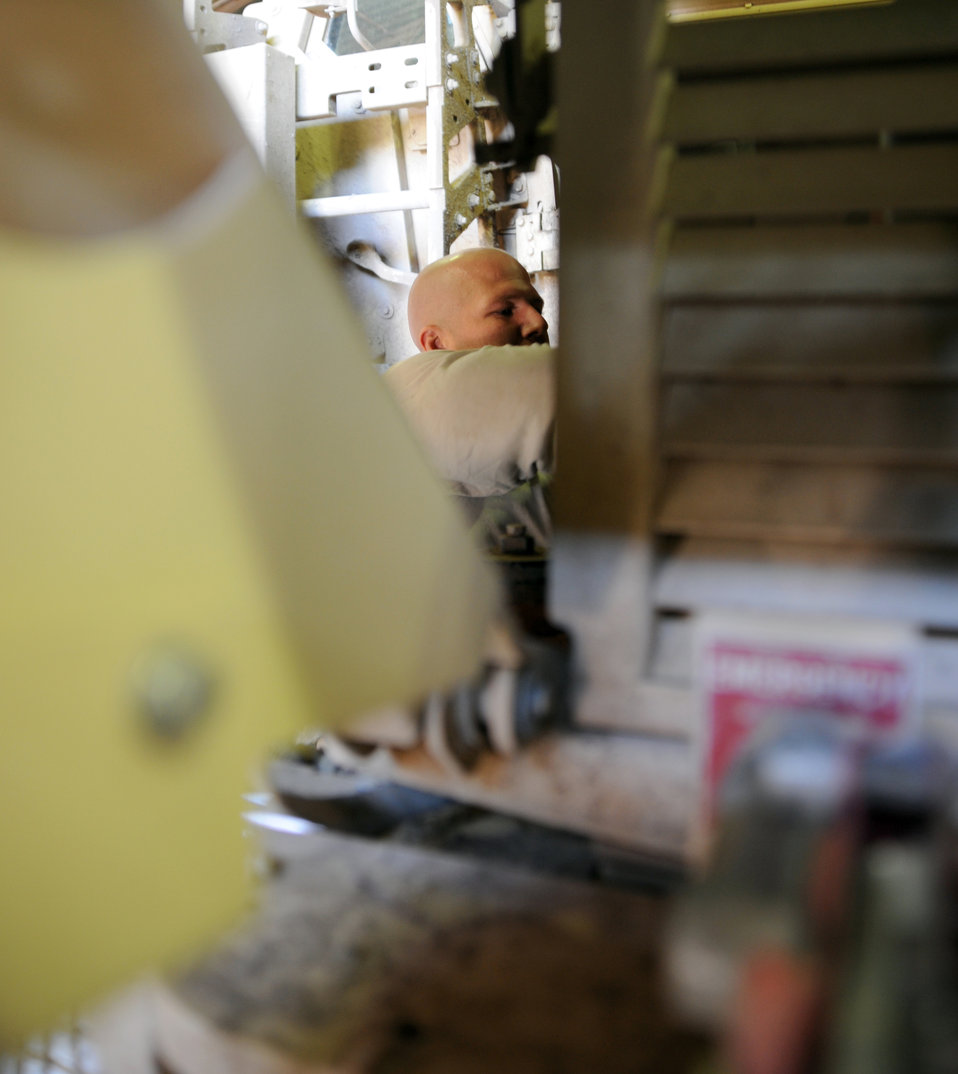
AF provides mechanical support to the joint warfighter

Staff Sgt. Kevin Wright, a 732nd Expeditionary Security Forces Squadron vehicle mechanic at Camp Taji, Iraq, performs maintenance on a mine resistant ambush protected vehicle Dec. 11, 2009. Five vehicle maintainers are attached to the unit to keep these life-saving vehicles operational. Sergeant Rodriguez is deployed from Holloman Air Force Base, N.M., and hails from Vancouver, Wash.